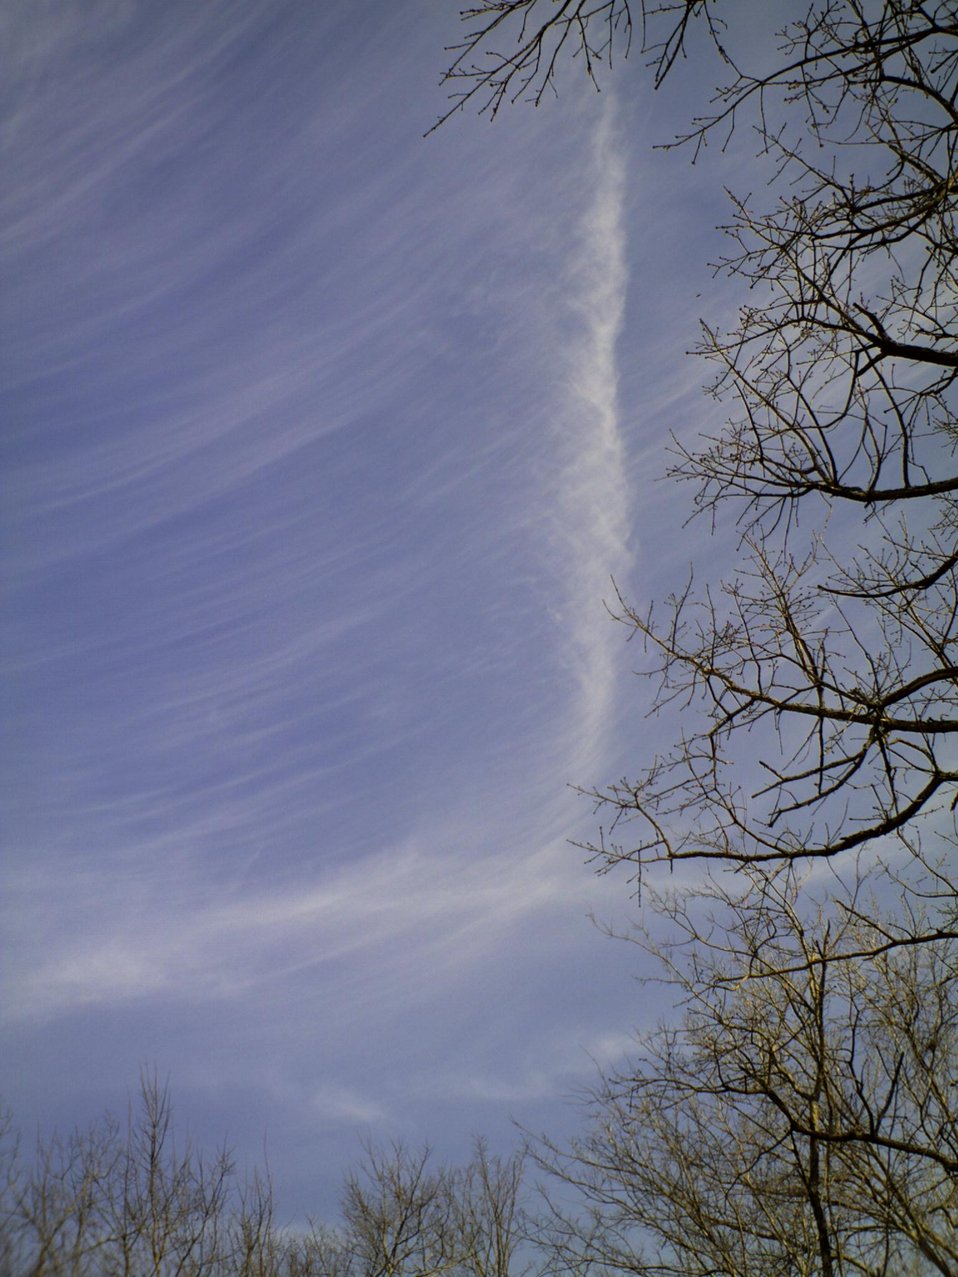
Uploaded by request of Misty Smith

Taken in Oklahoma

The planes were nice enough to completely cover the cloudless, blue, sunny sky with these lovely, manmade ..uhhh...'cirrus clouds'.